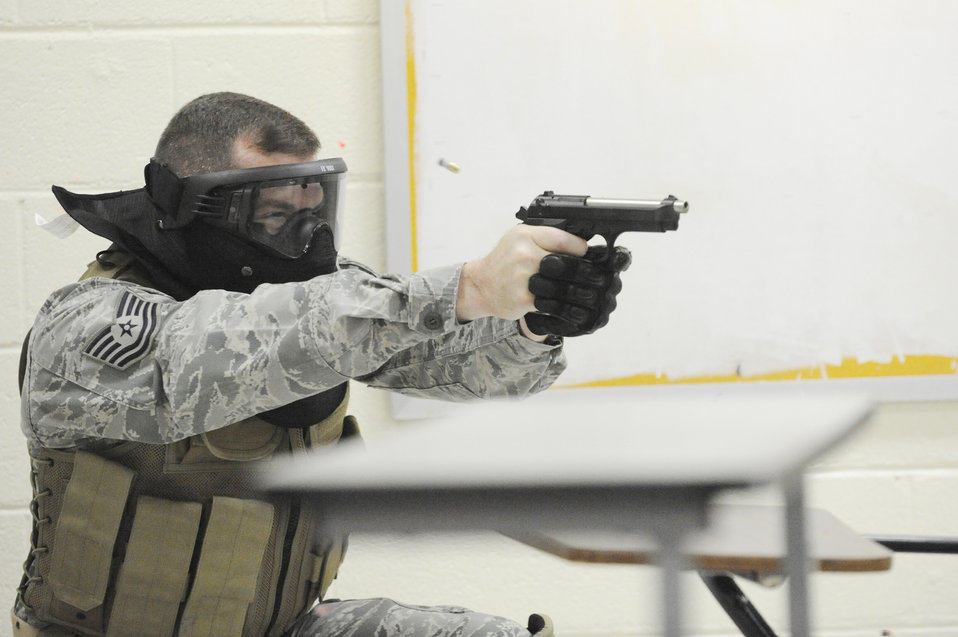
Bullseye!

Tech. Sgt. Chad Murphy opens fire on a